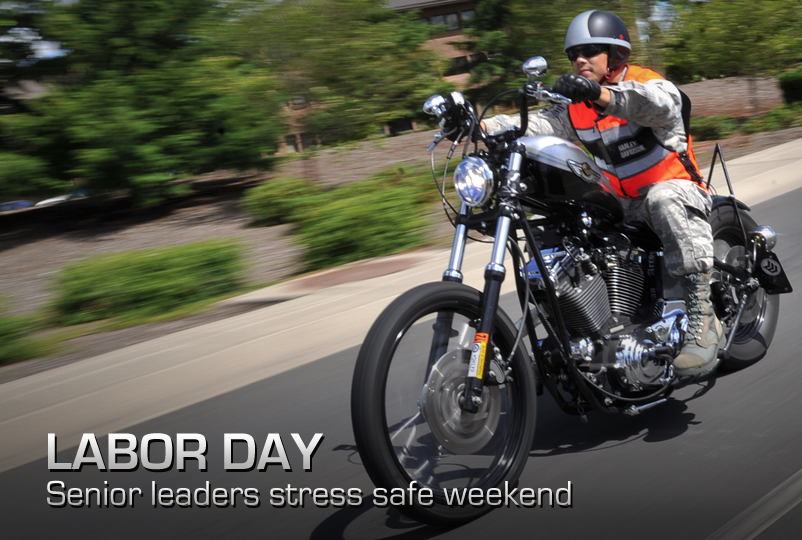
Labor Day